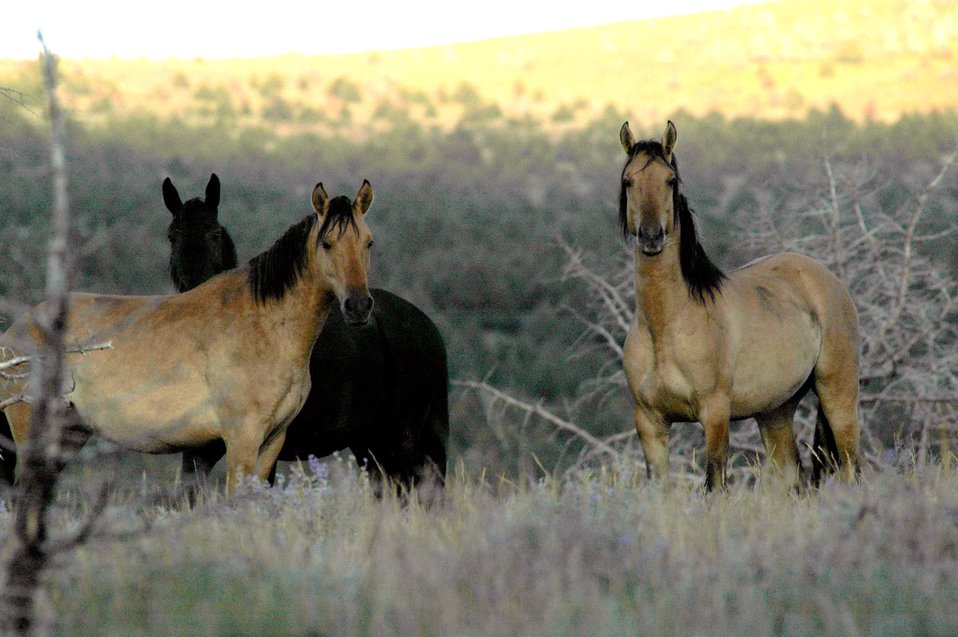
Kiger horses roam the plateaus of the Kiger Wildhorse Herd Management Area near Steens Mountain in Southeastern Oregon.